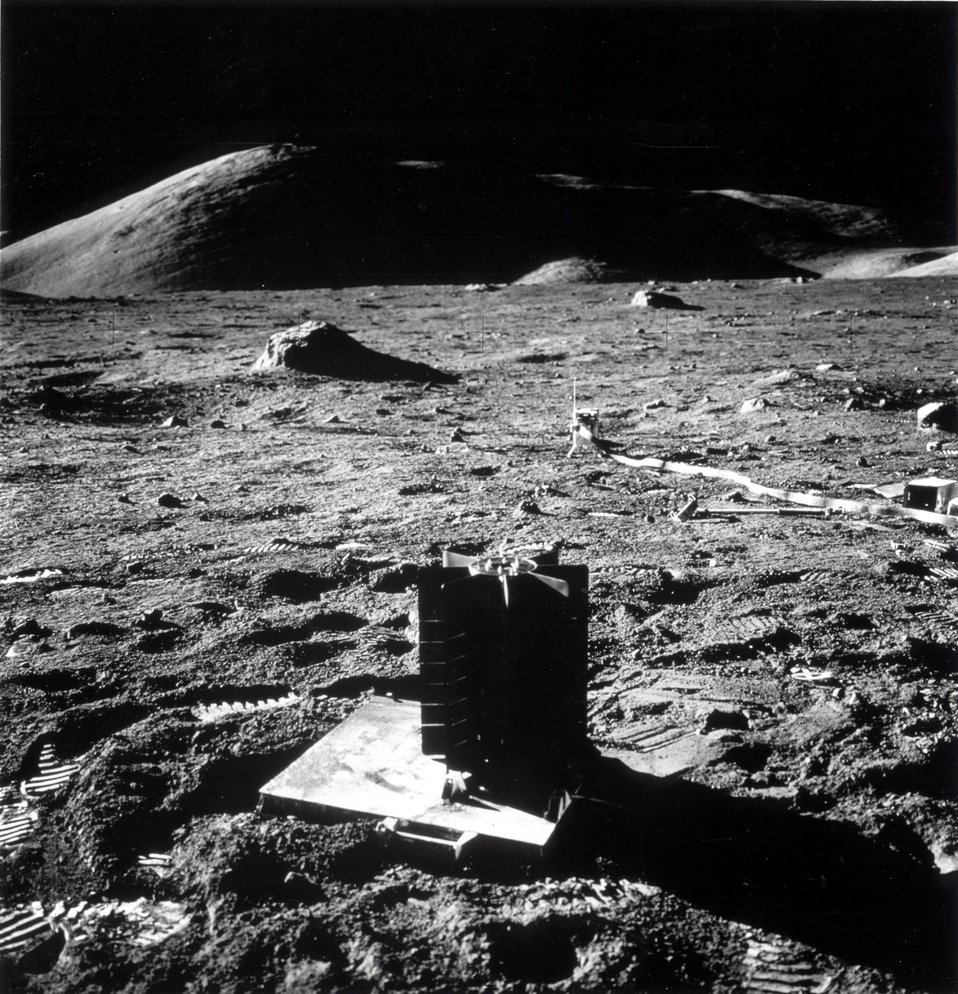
Atomic Power Generator on the Moon... The U.S. Atomic Energy Commission-developed compact atomic power generator, technically known as a radio-isotopic thermometric generator (SNAP-27), on the moon.